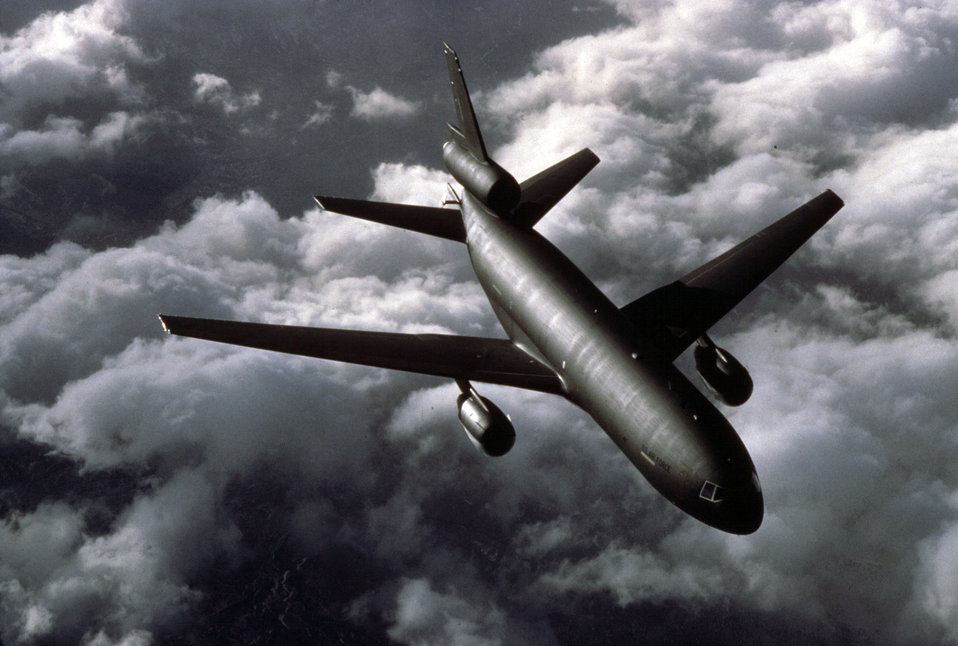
KC-10

1980s -- The KC-10 Extender entered service in 1981.